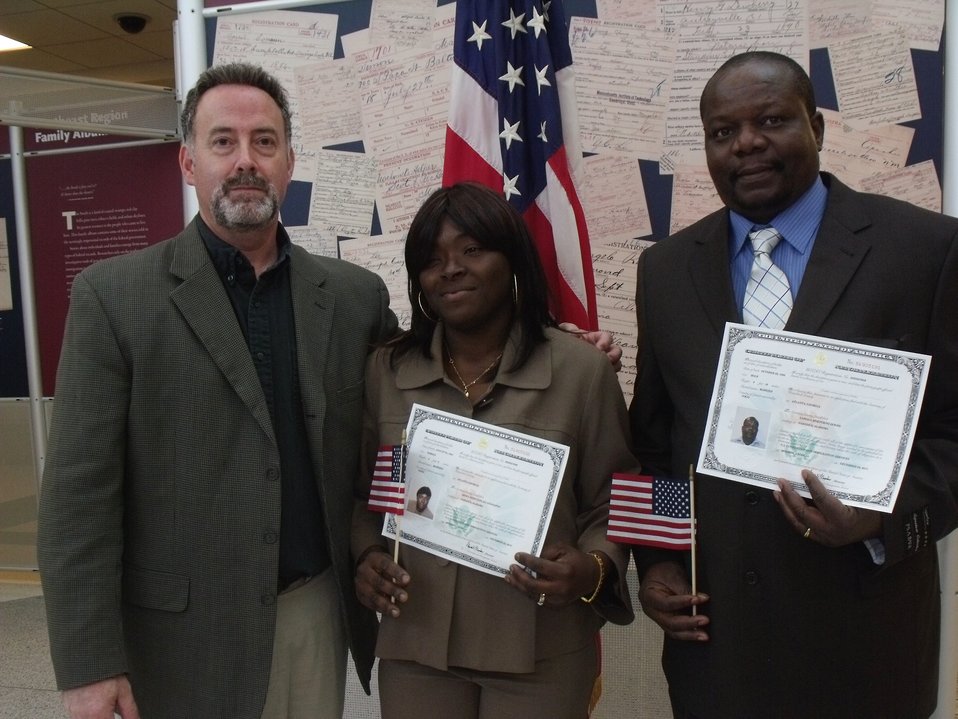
New Citizens